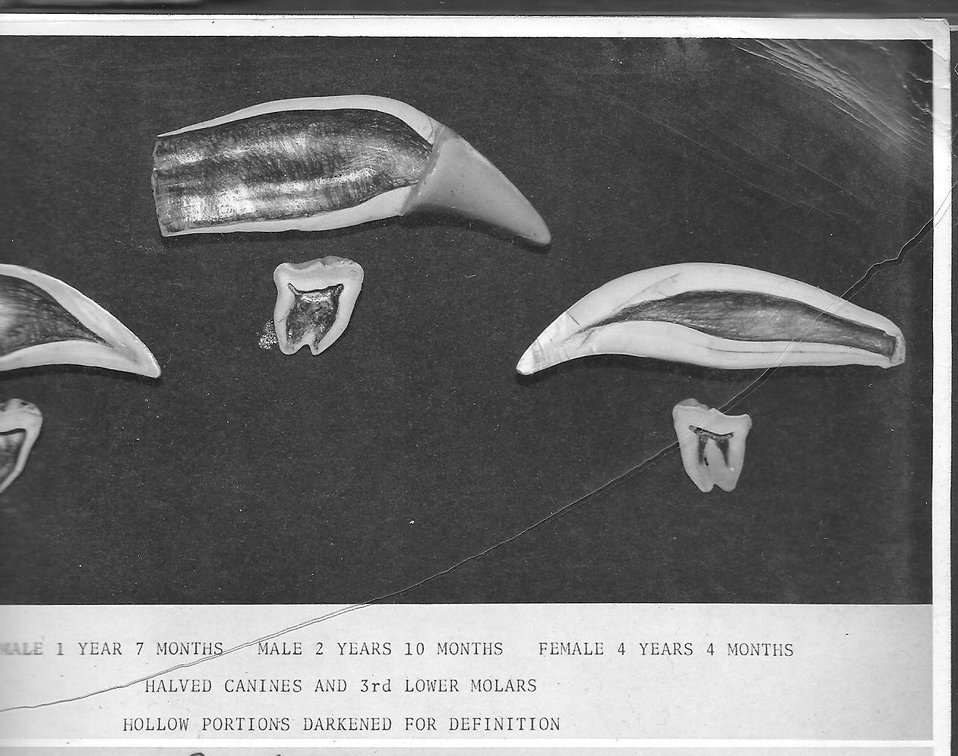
(1964) Halved Bear Canines

Credit: USFWS

Source and Contact: Kodiak National Wildlife Refuge